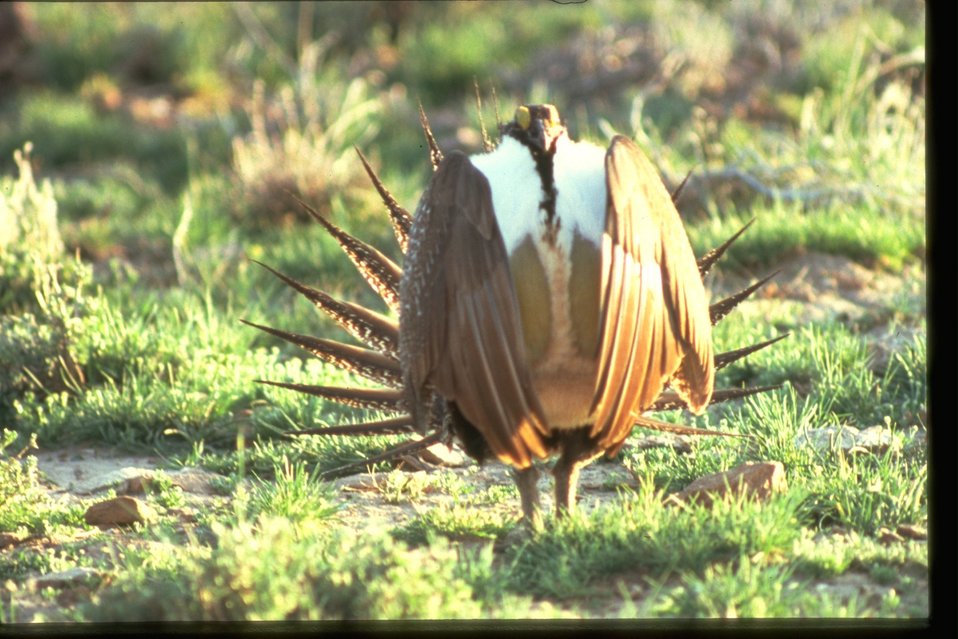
Sage Grouse with feathers spread out.